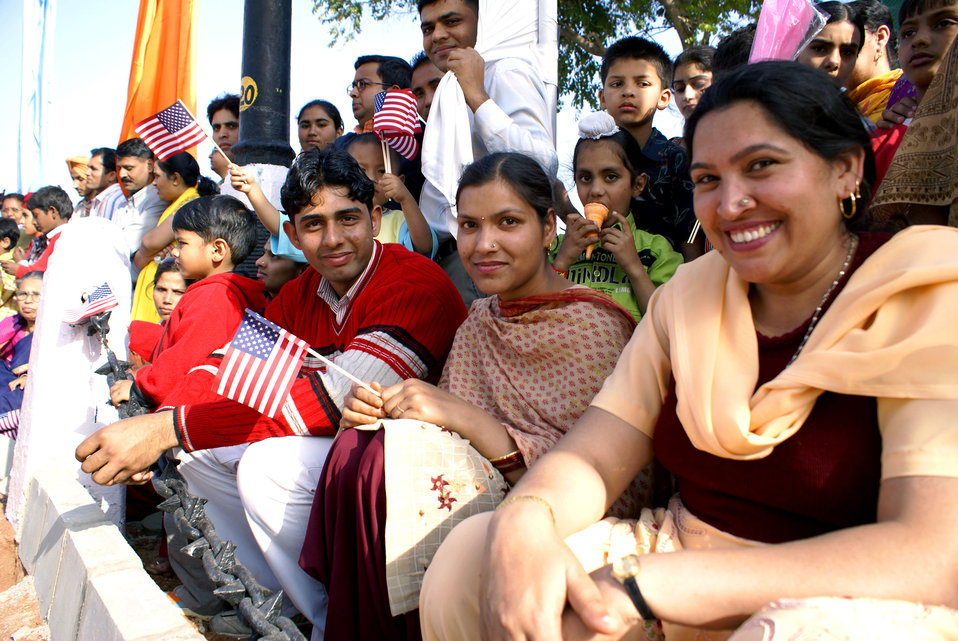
PACAF band entertains at Indian Air Force jubilee

Crowd members wave American flags while the Pacific Air Forces rock band Pacific Trends plays beneath the India Gate in New Delhi March 17 during the Platinum Jubilee Tattoo. The Indian Air Force invited the band to take part in the multinational celebration, which included military bands from India, Singapore, Sri Lanka and Thailand. The IAF celebrates its 75th birthday this year.